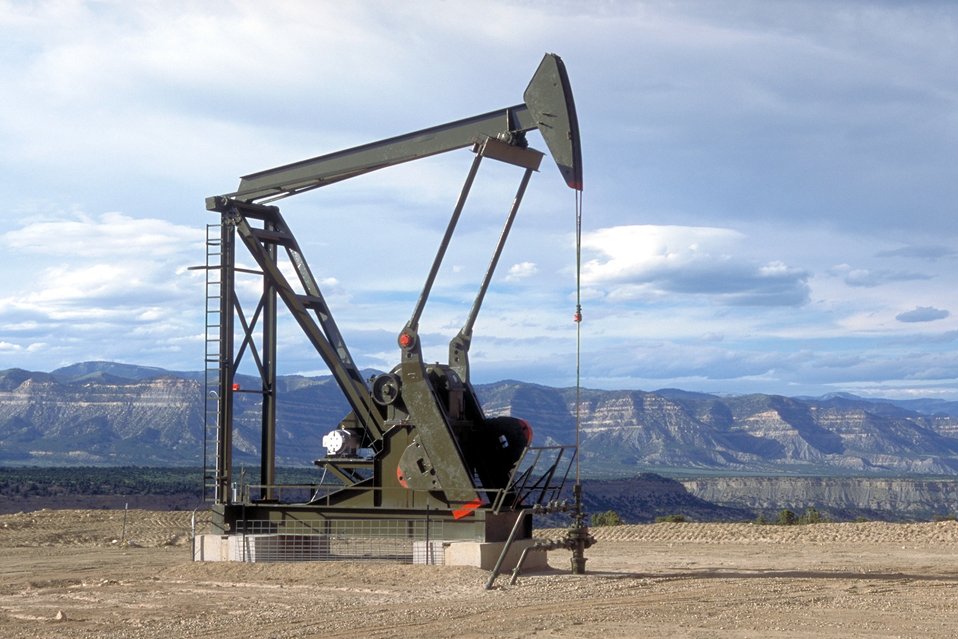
Pump unit producing coal bed methane near Price, Utah.